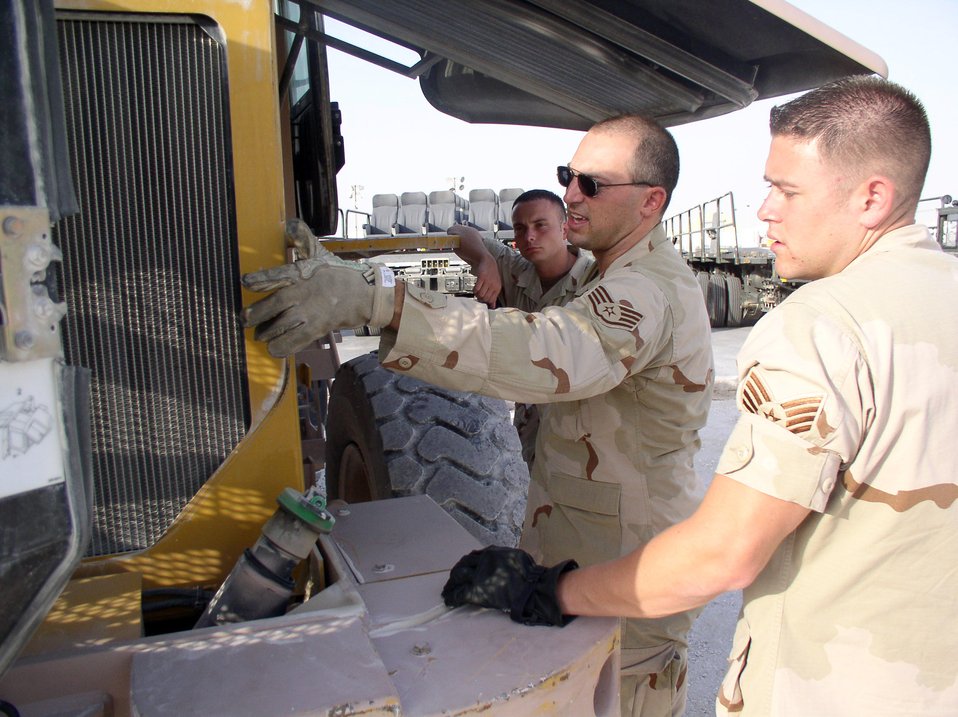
Forklift OJT

Staff Sgt. John Padget instructs Staff Sgt. Jason Gray and Senior Airman Richard Sanders in the preventative maintenance of an all-terrain forklift at a forward operating location in Southwest Asia on July 3. The Airmen are with the 379th Expeditionary Operational Support Squadron.